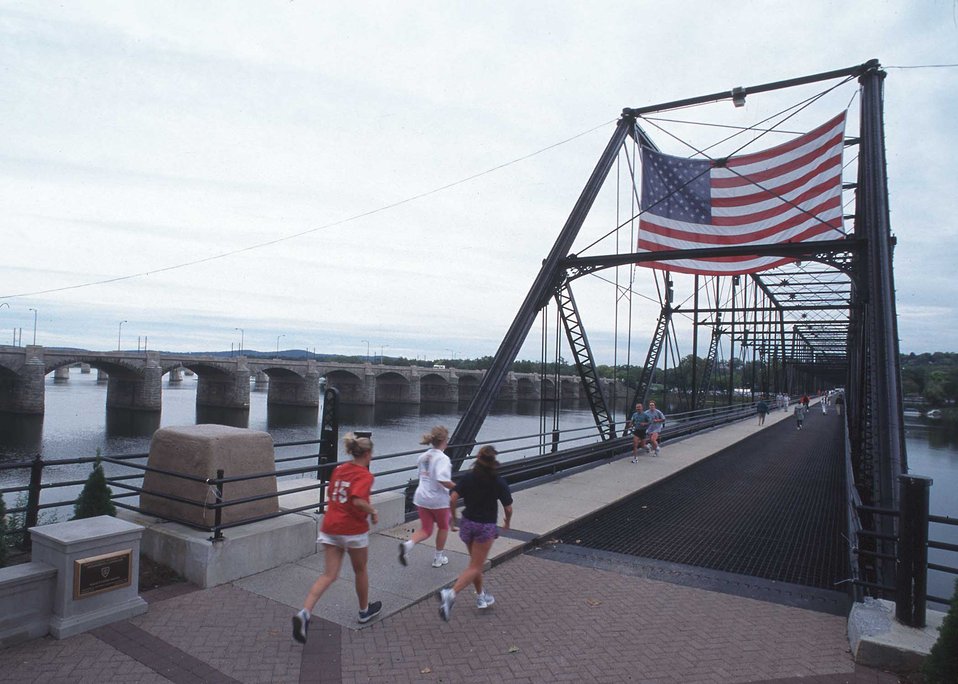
Joggers on the Walking Bridge, Susquehanna River, Harrisburg, PA.